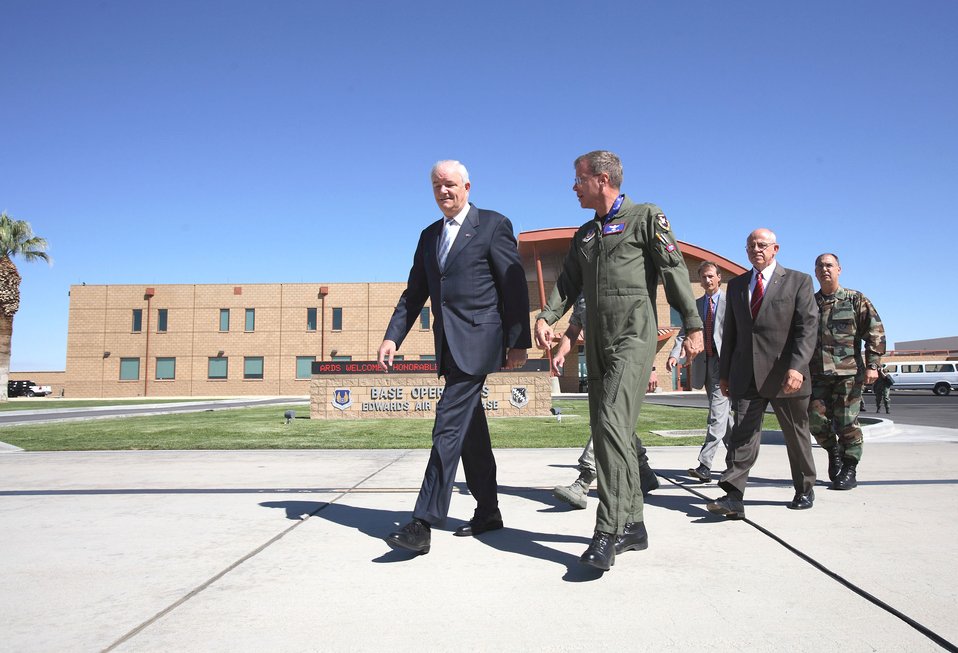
SECAF certifies Fischer-Tropsch synthetic fuel blends for B-52H

Secretary of the Air Force Michael W. Wynne and Maj. Gen. Curtis Bedke, Air Force Flight Test Center commander, walk to a ceremony at Edwards Air Force Base, Calif., Aug. 8. During the ceremony, Secretary Wynne certified Fischer-Tropsch synthetic fuel blends for use in the B-52H Stratofortress. Following Secretary Wynne and General Bedke are Jerold Smith (center), chief engineer with the 327th Aircraft Sustainment Group at Tinker AFB, Okla.; Timothy Dues (second from right), deputy director for Maintenance, Logistics Directorate, Wright-Patterson AFB, Ohio; and Col. Michael Hirka (far right), 327th ASG commander.